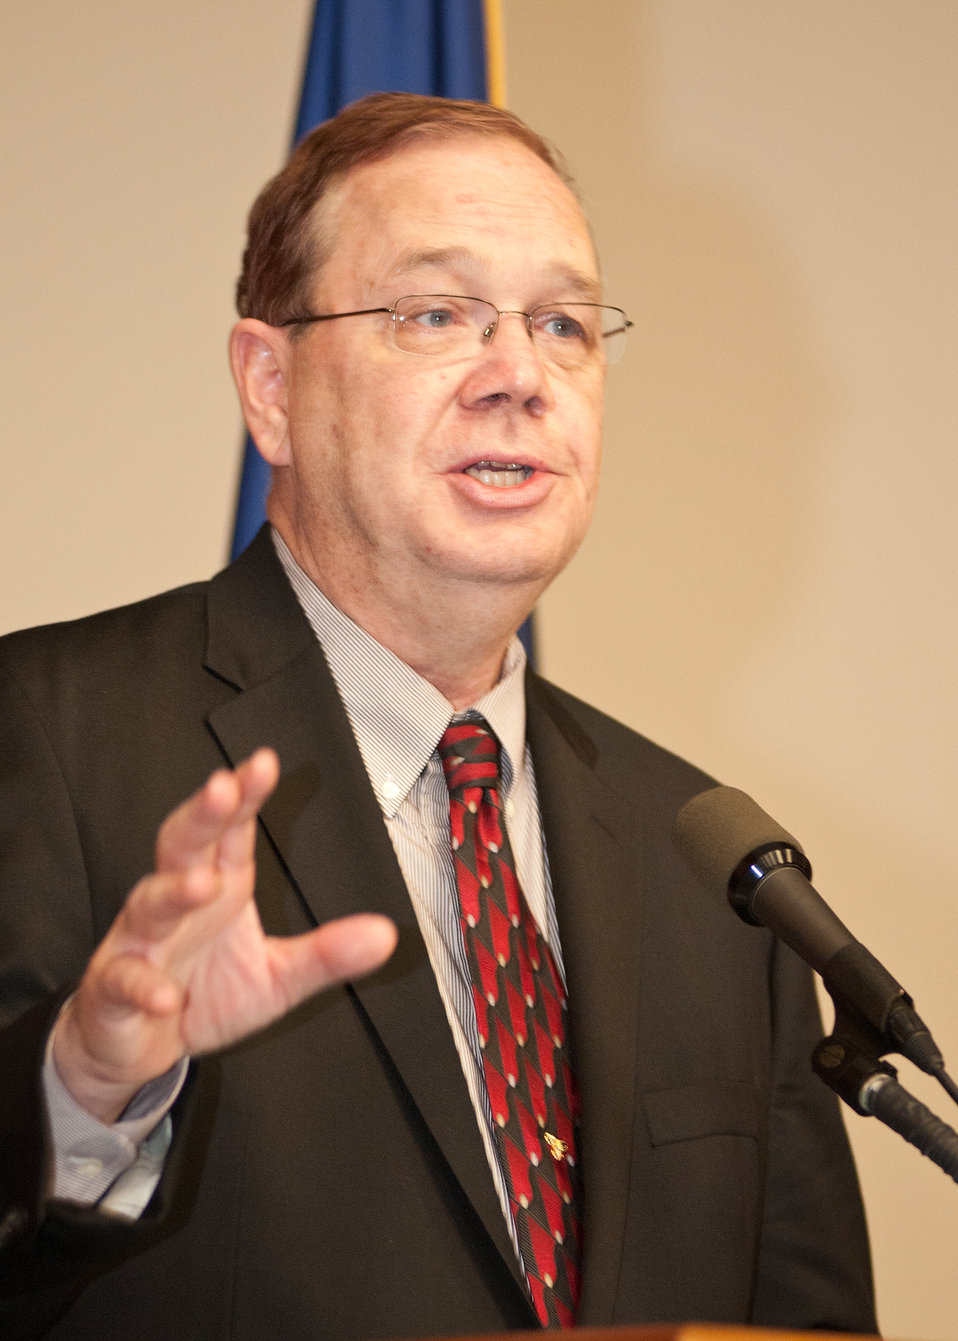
Dallas Tonsager, Under Secretary, Rural Development offers his congratulations to retiring employees and thanks to all employees for their public service and hard work during the Rural Development Celebration of Service held at the United States Department of Agriculture in Washington, DC, Wednesday, November 16, 2011.